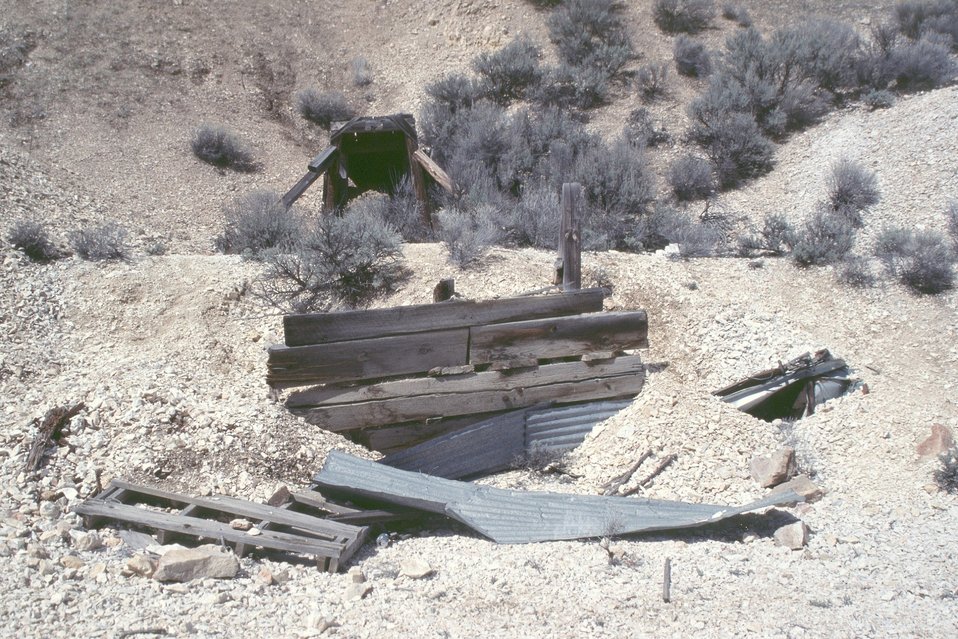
AML Glass Buttes, G2, Burns District. Another view of the short adit in the hillside showing in the foreground a loading dock for ore transport to the retort.